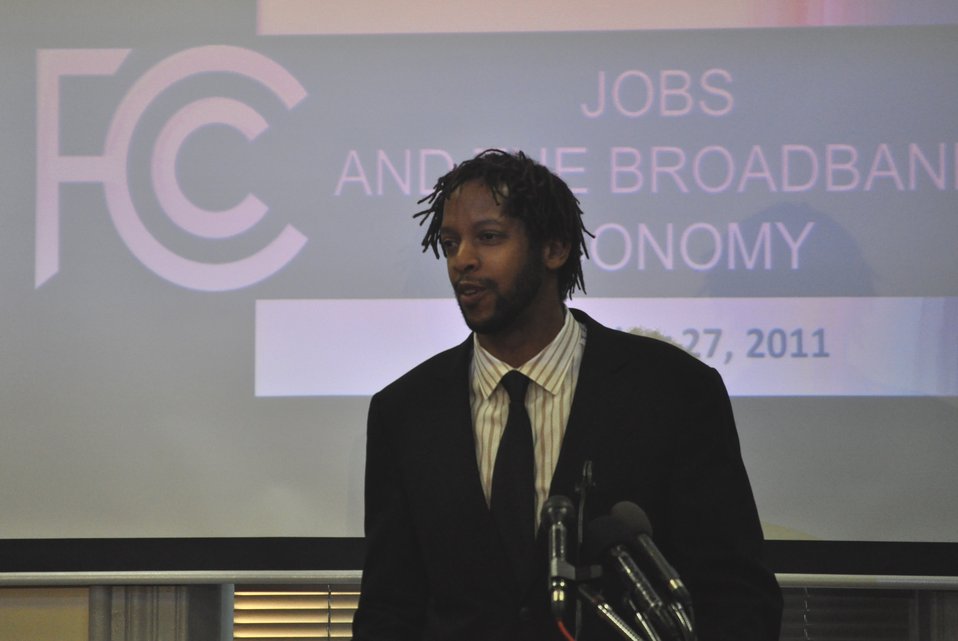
Jobs and the Broadband Economy

Warren Brown, Founder and Owner of CakeLove